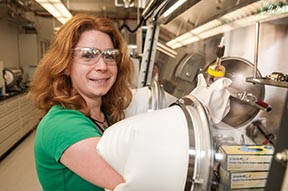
At Argonne National Laboratory, an Early Career Research Award winner, studies Li-Air batteries as part of the Laboratory Directed Research and Development Director's Grand Challenge Project.

Research electrolyte stability in hopes of finding ways to prevent electrolyte decomposition over the cycle life of Li-air batteries.